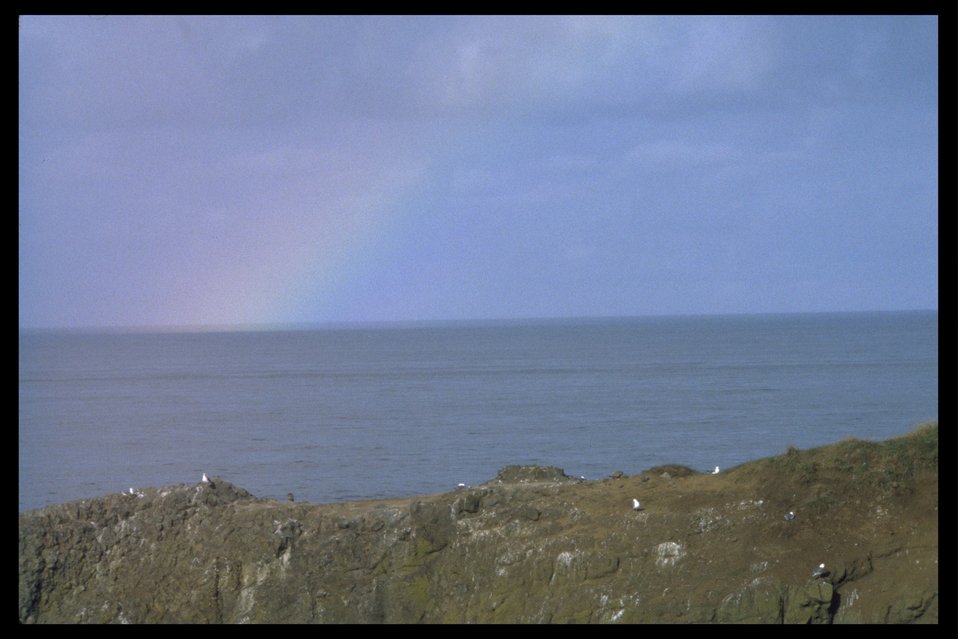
Rainbow over cliff near Yaquina Head Lighthouse.